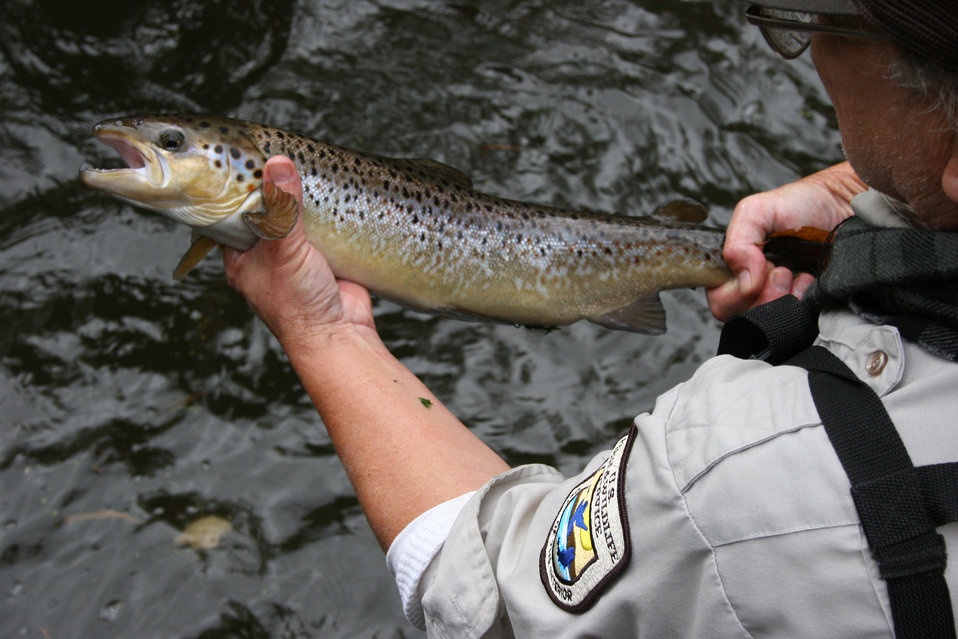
Atlantic Salmon